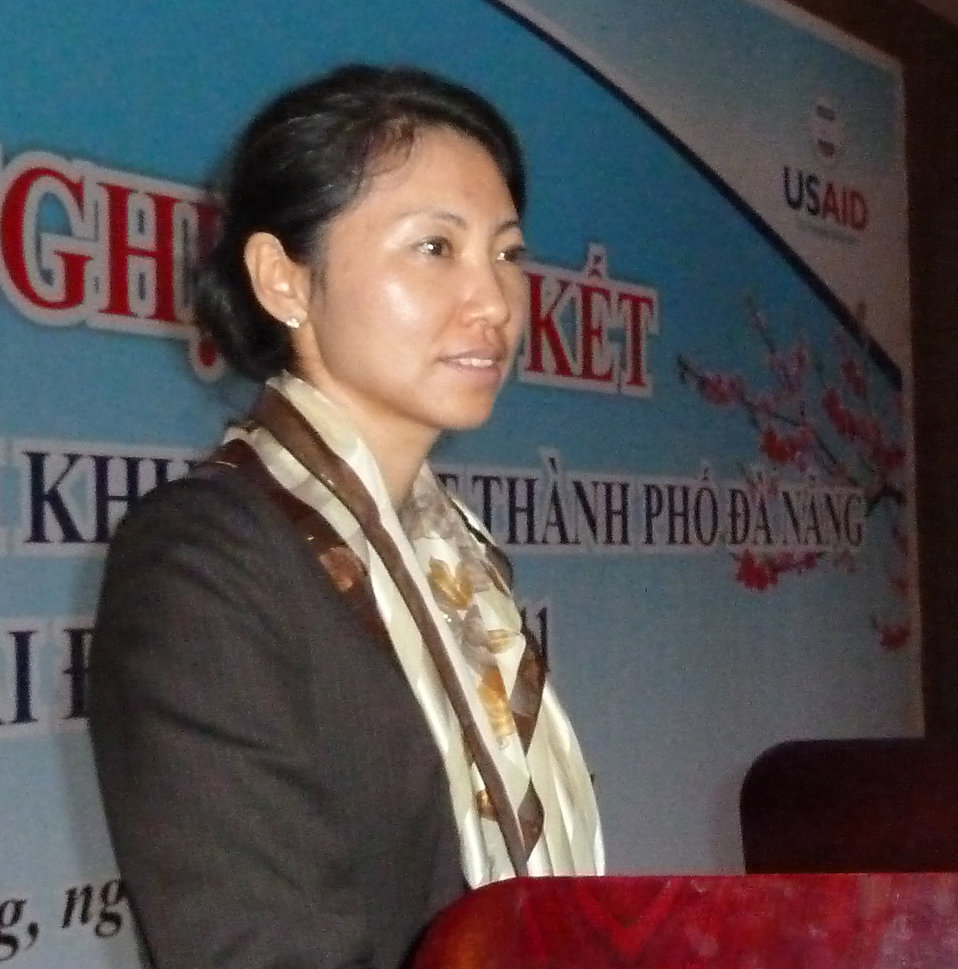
Danang Disability Workshop: USAID General Development Office Director Kyung Choe.

Close out workshop of three-year USAID program in disabilities, Danang